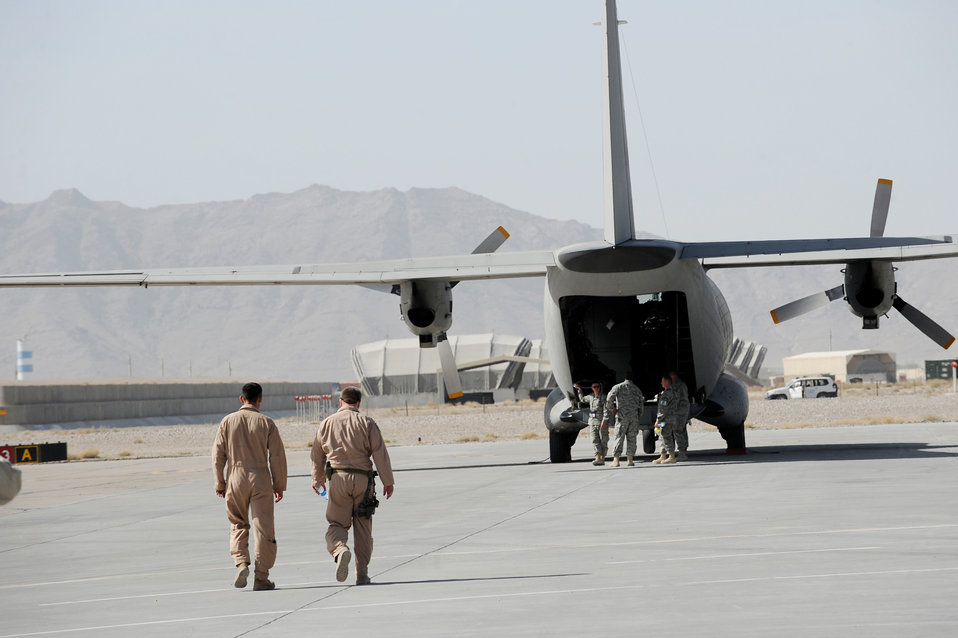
Airmen help Afghans fly C-27 mission

Afghanistan National Army Air Corps 1st Lt. Faiz M. Ramaki and Lt. Col. James Piel walk to a parked ANAAC C-27 Spartan March 24, 2010, at Kandahar Airfield, Afghanistan. Colonel Piel is the 538th Air Expeditionary Advisory Squadron commander and C-27 pilot-mentor. Lieutenant Ramaki is an ANAAC C-27 pilot.